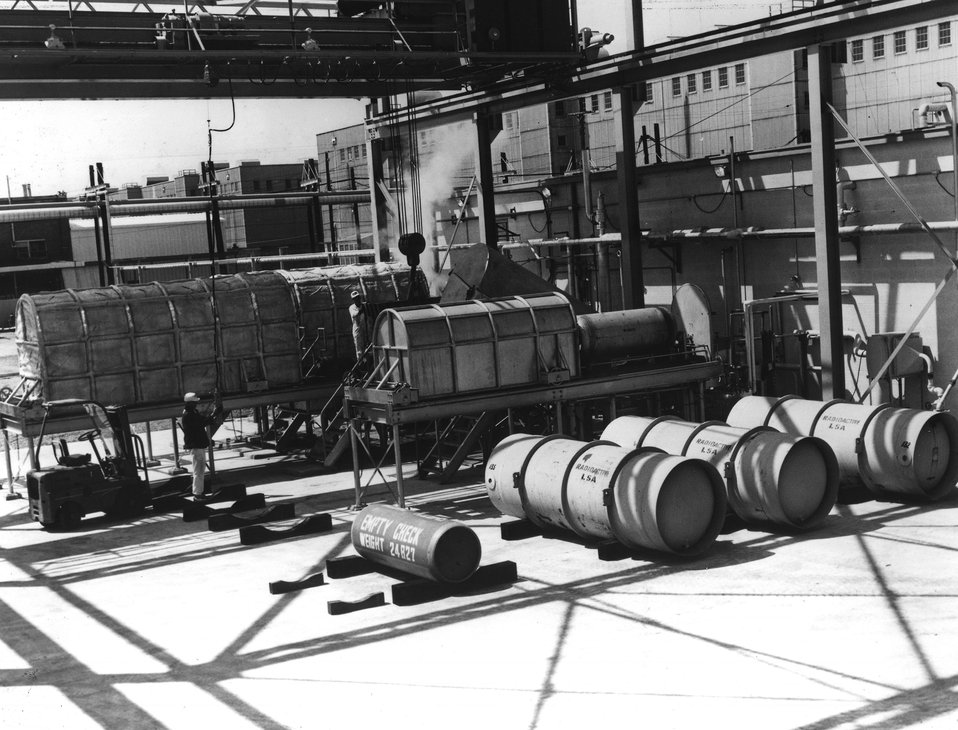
This is the weighing and assaying facility at Oak Ridge. c. 1972